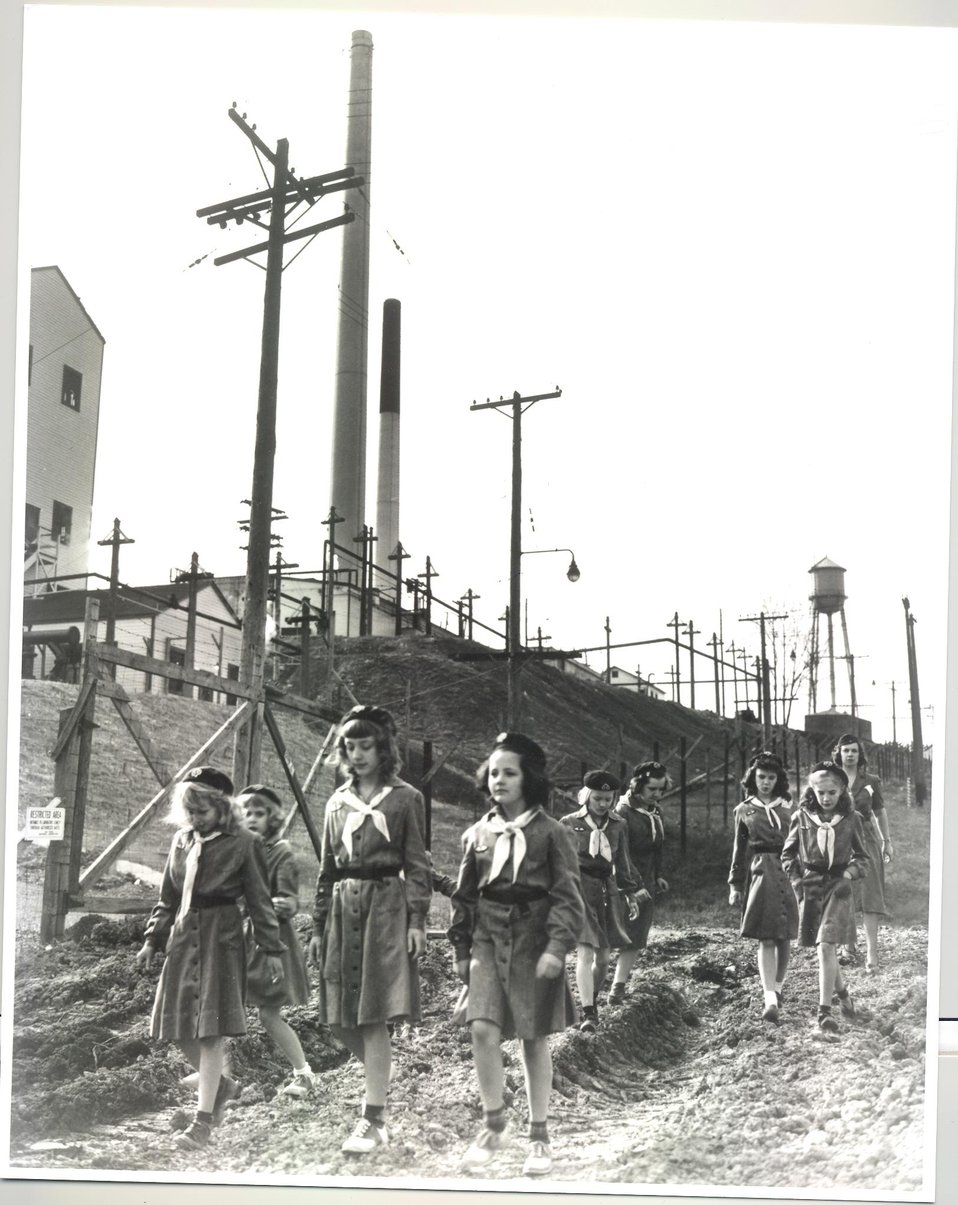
Group of Girl Scouts by Fence at ORNL